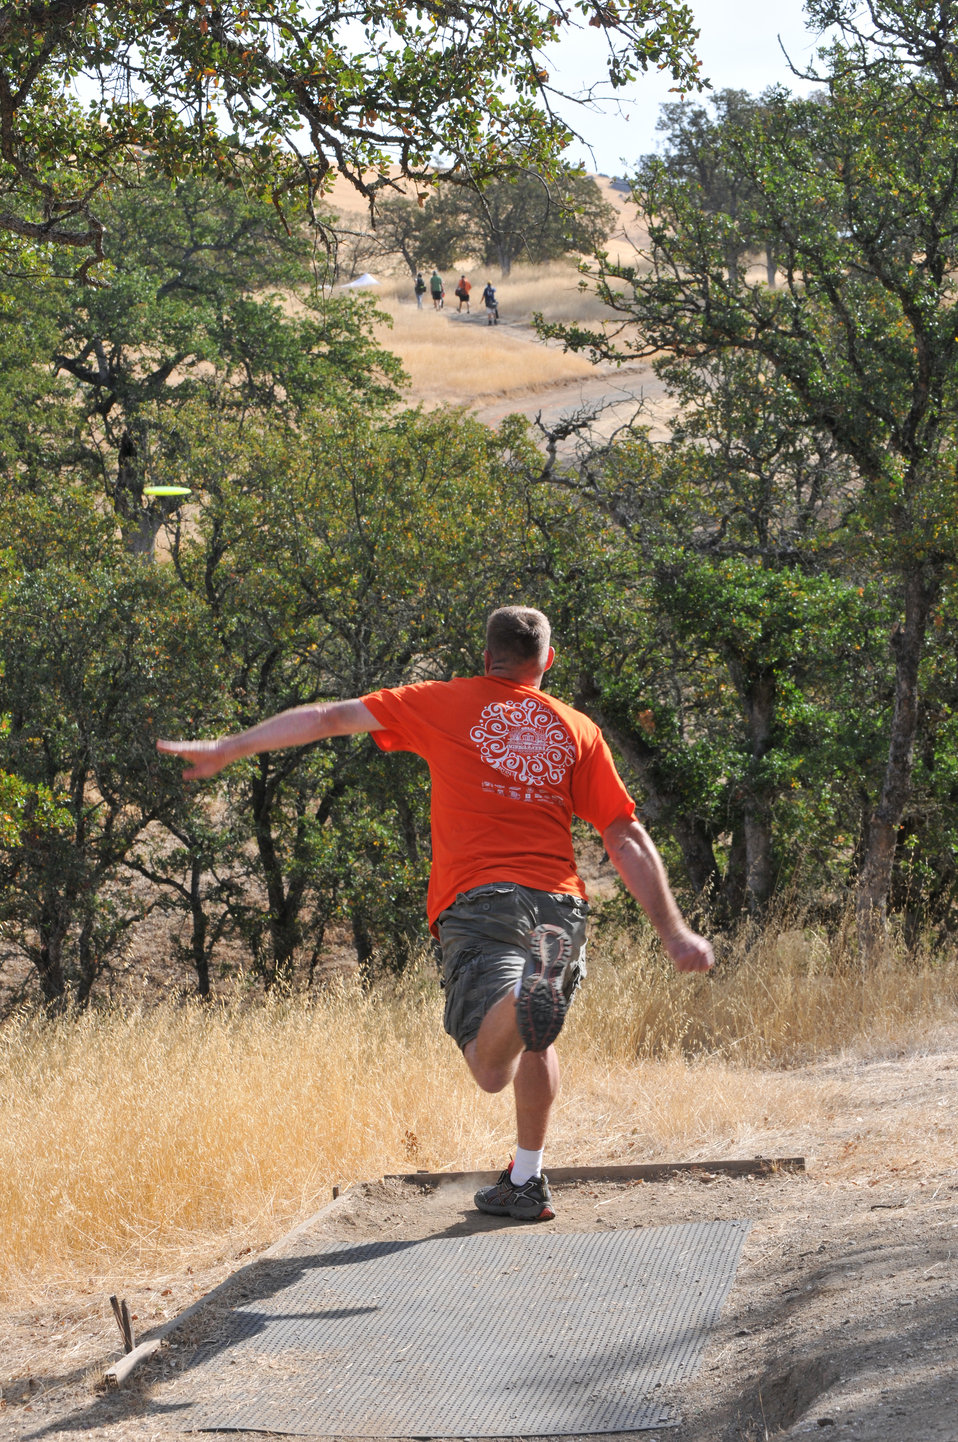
BLACK BUTTE LAKE, Calif. (Oct. 18, 2010) -- A disc golfer tees off during the Professional Disc Golf Association's Norcal Series Championships here Oct. 16. The U.S. Army Corps of Engineers Sacramento District’s Black Butte hosted the tournament Oct. 15-17 at its new disc golf course, built on park lands by The Orland Aces disc golf club under a partnership with the Corps. More than 150 disc golfers from as far as Texas competed in the tournament.